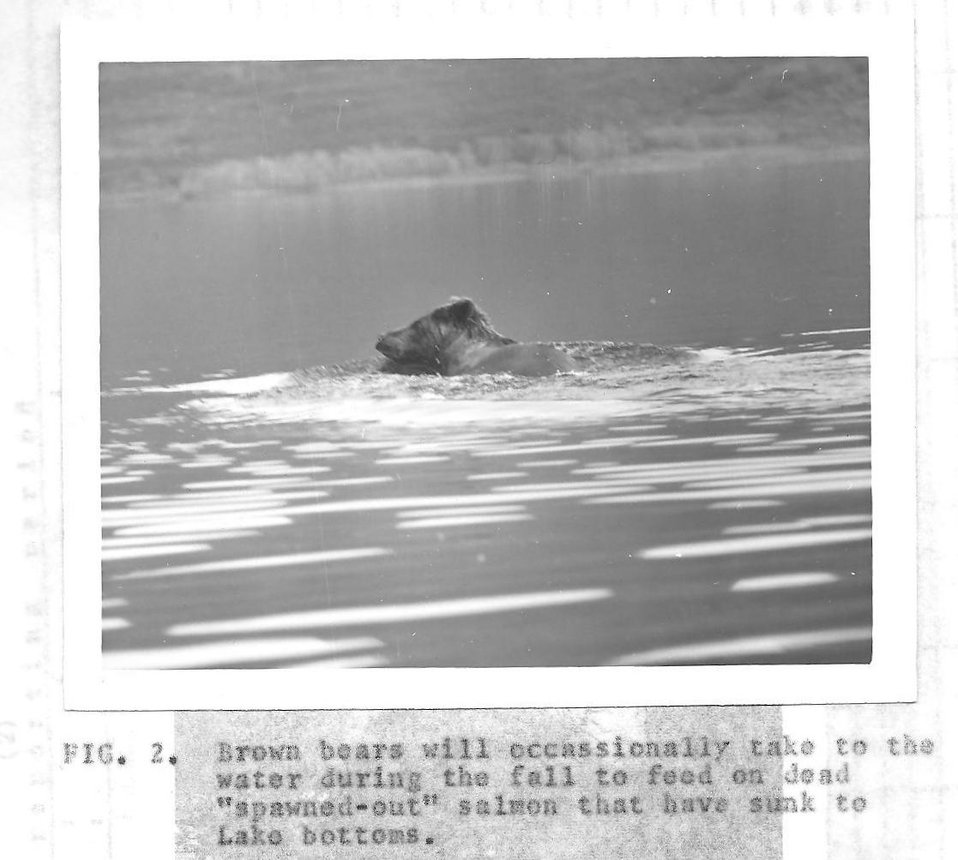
(1963) Swimming Bear

Credit: USFWS

Source and Contact: Kodiak National Wildlife Refuge